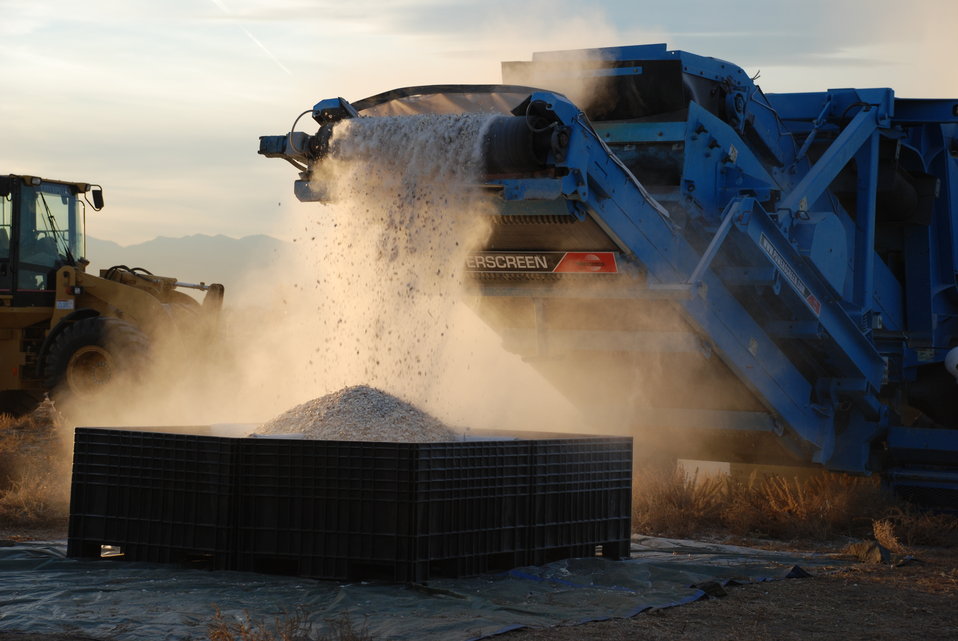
Ivory Crush 2013